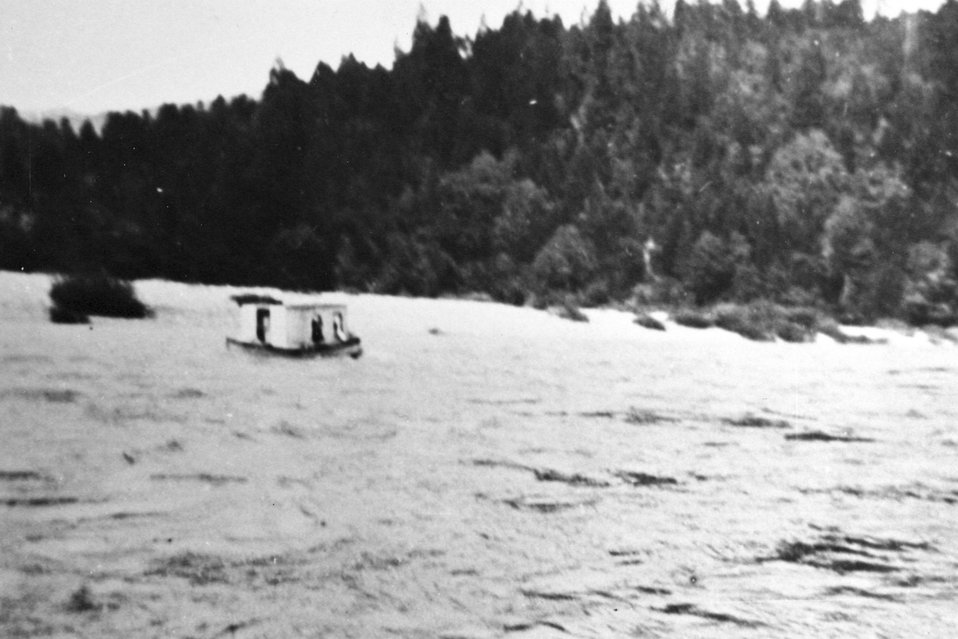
Mail boat on way to Agness.